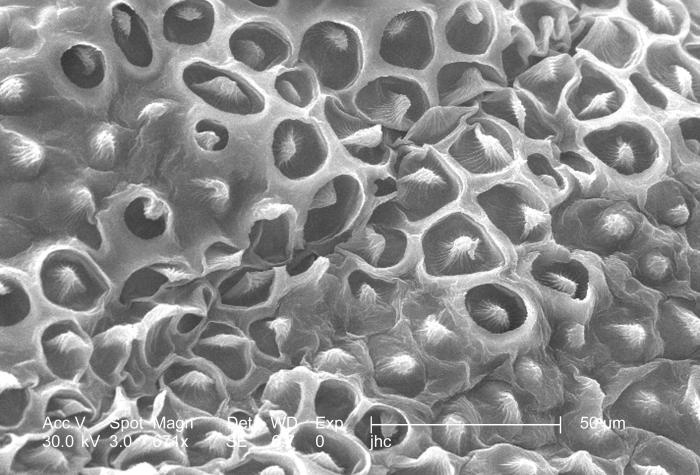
Under a moderately high magnification of 671x, this scanning electron micrograph (SEM) revealed some of the ultrastructural details seen on the surface of a "crimson clover", Trifolium incarnatum flower petal. This clover was blooming during the month of March on the grounds of the Centers for Disease Control headquarters in Atlanta, Georgia. Being that flower petals are actually modified leaves, the highly textured surface, composed of many cavitations and protuberances, are actually modification of the plant's leaf morphology, such as the leaf's stomata, which are the leaf pores through which the plant respires.